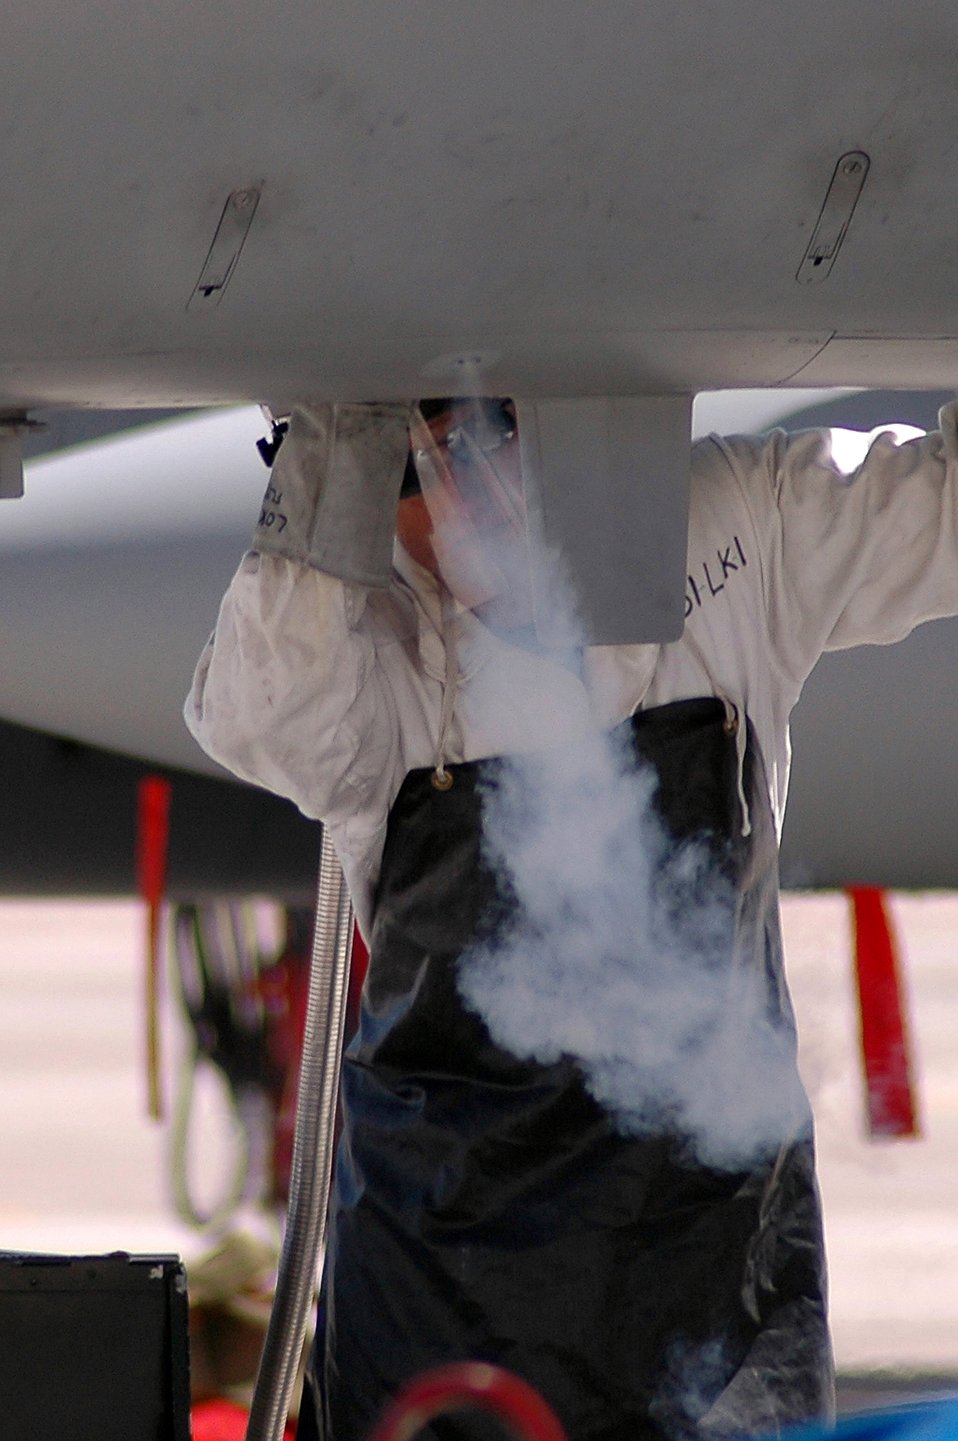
Revving up for Red Flag

Crew chief Senior Airman Joe King fills a liquid oxygen tank on an F-15 Eagle during the Red Flag 07-3 exercise Aug. 28 at Nellis Air Force Base, Nev. Servicemembers from all the U.S. military branches, along with coalition forces, are participating in the event. Airman King is assigned to the Air National Guard's 142nd Fighter Wing at Portland, Ore.